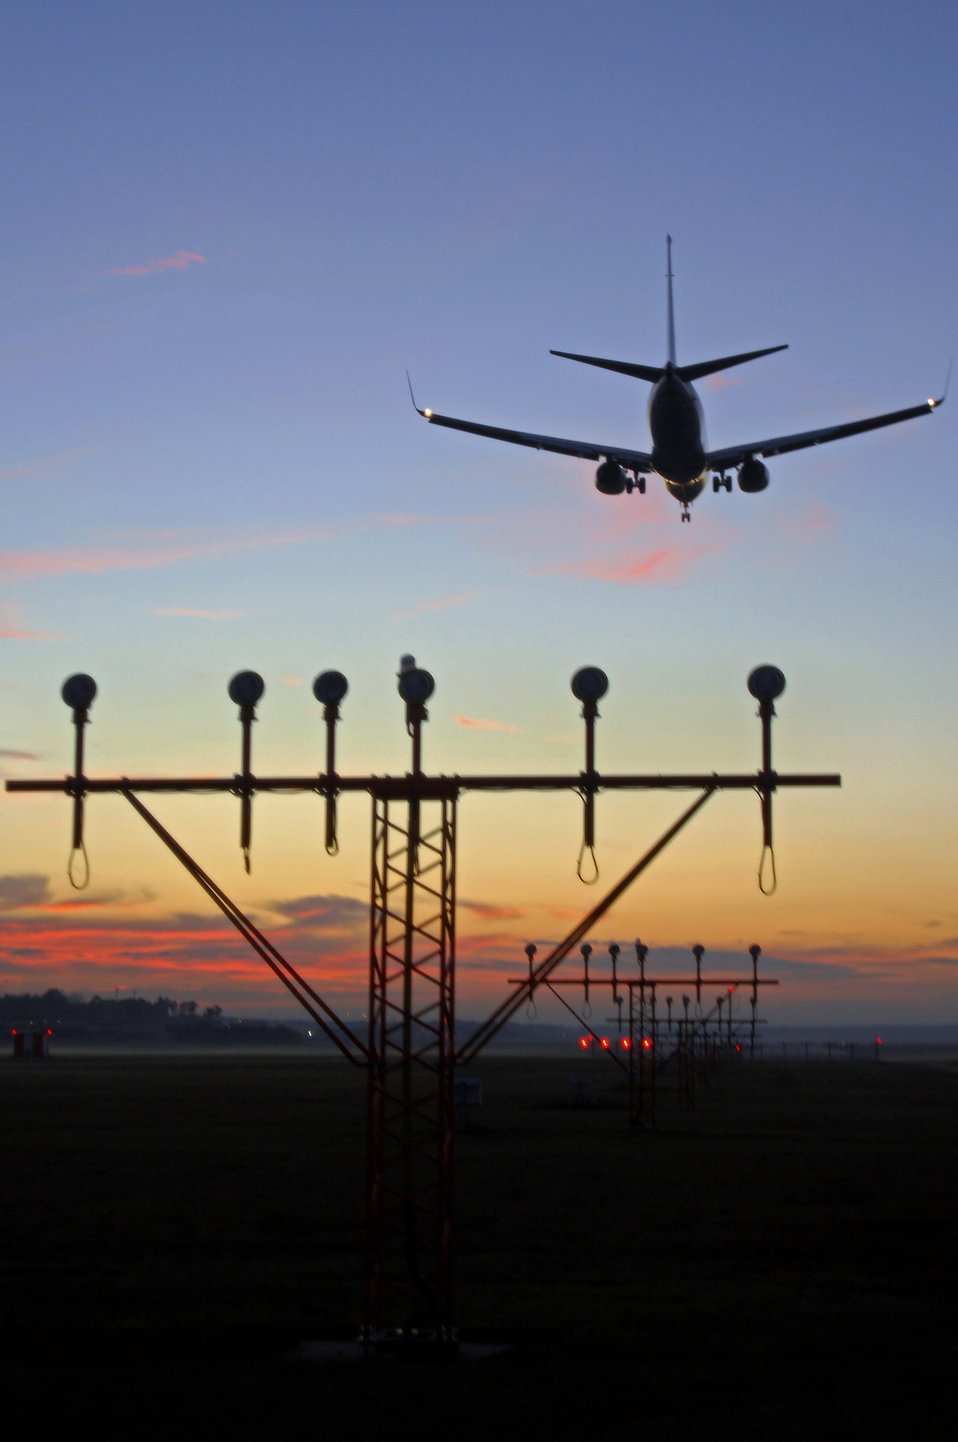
The sky is the limit

A C-20 lands Nov. 3 at Ramstein Air Base, Germany. Ramstein AB officials handle more than 85 aircraft operations daily.